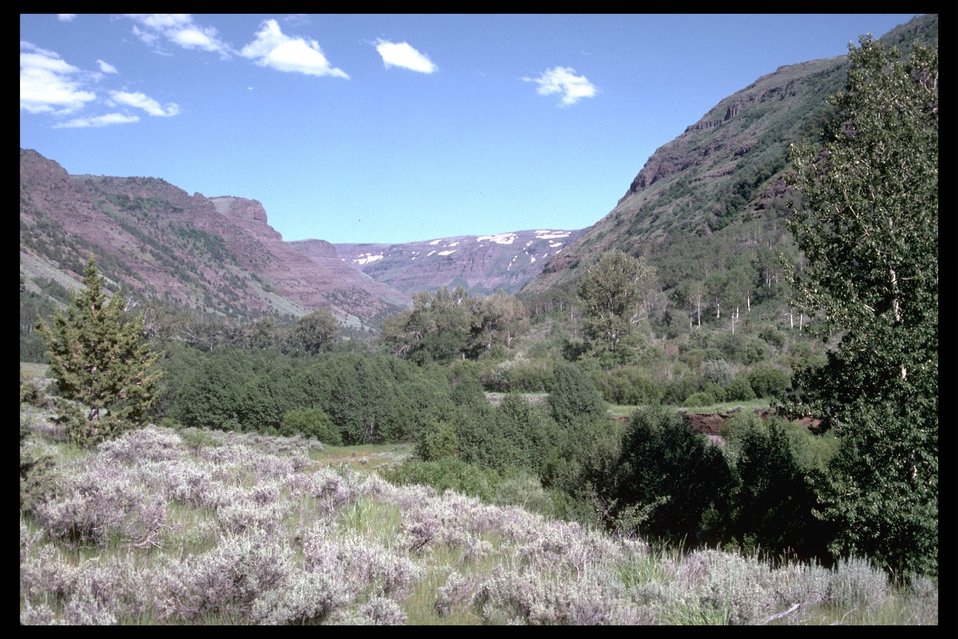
Little Blitzen Gorge from canyon floor. (WSA 2-86F)